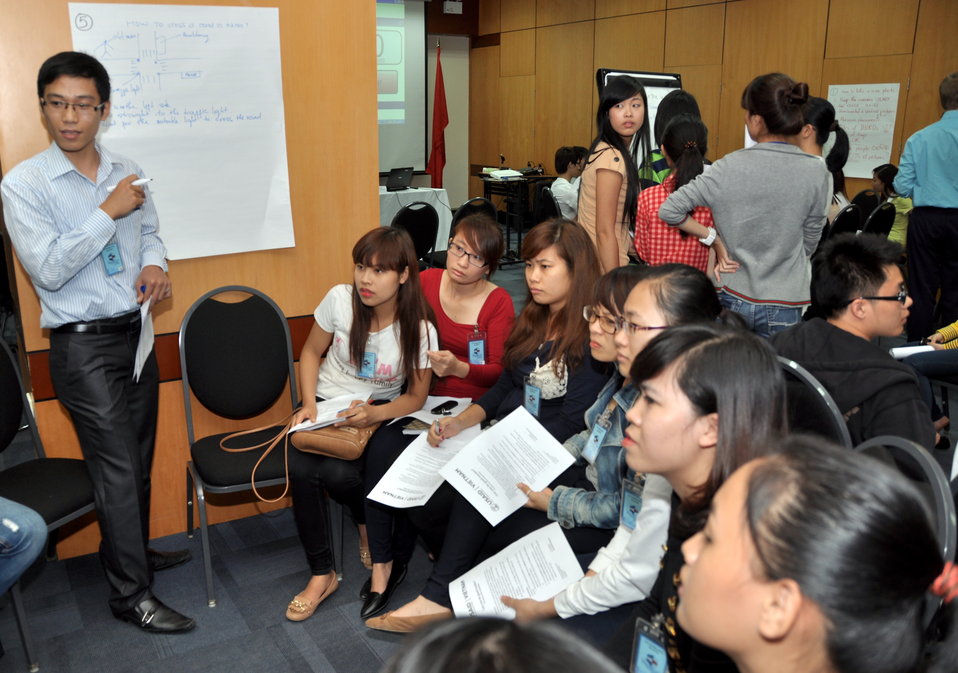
Students join the ‘USAID and Higher Education in Vietnam’ talk

Photo: @USAIDVietnam, November 19, 2012